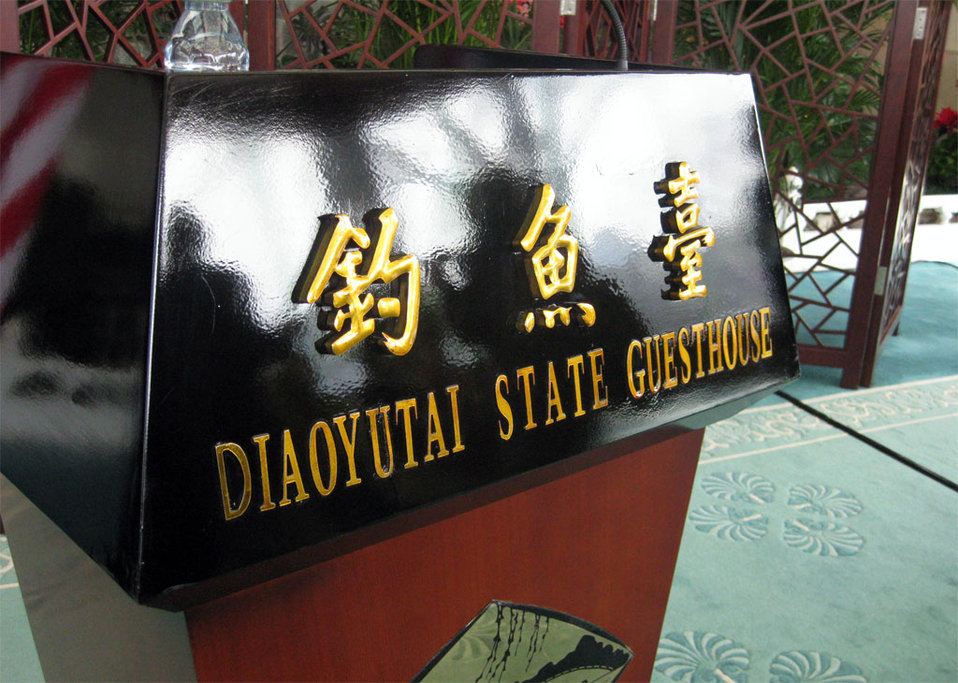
Diaoyutai State Guesthouse Podium

Behind the Scenes: The podium stands empty prior to a press conference by U.S. Secretary of State Hillary Rodham Clinton at the Diaoyutai State Guesthouse in Beijing, China February 20, 2009.